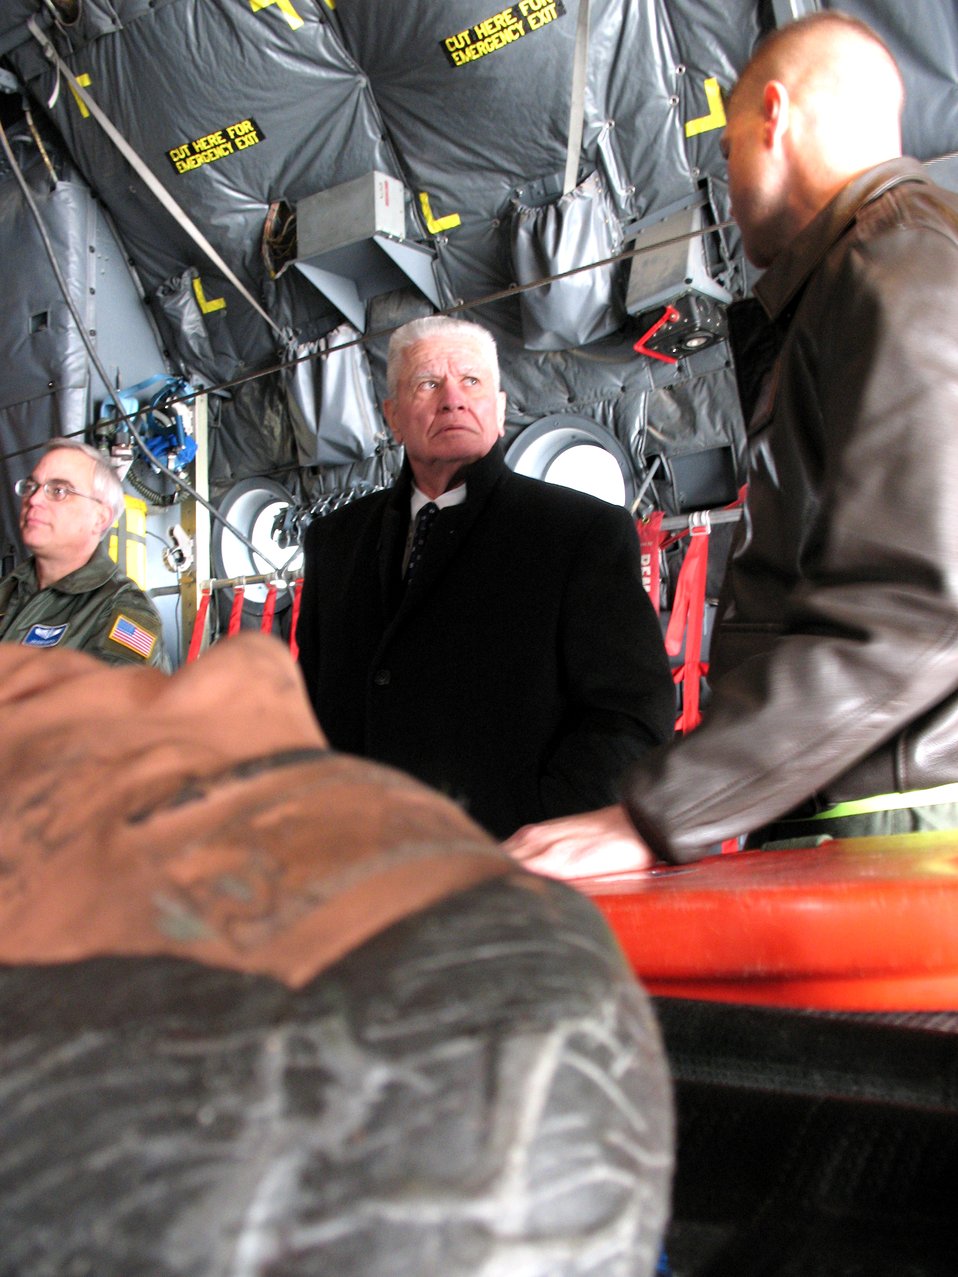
Top American doctors visit Ramstein, Landstuhl

Dr. William Plested gets a briefing about aeromedical evacuation procedures on a C-130 Hercules by Tech. Sgt. Phillip Gettins Feb. 22 at Ramstein Air Base, Germany. Dr. Plested is the president of the American Medical Association and was visiting Ramstein AB to see firsthand how military medicine gets wounded troops back home.